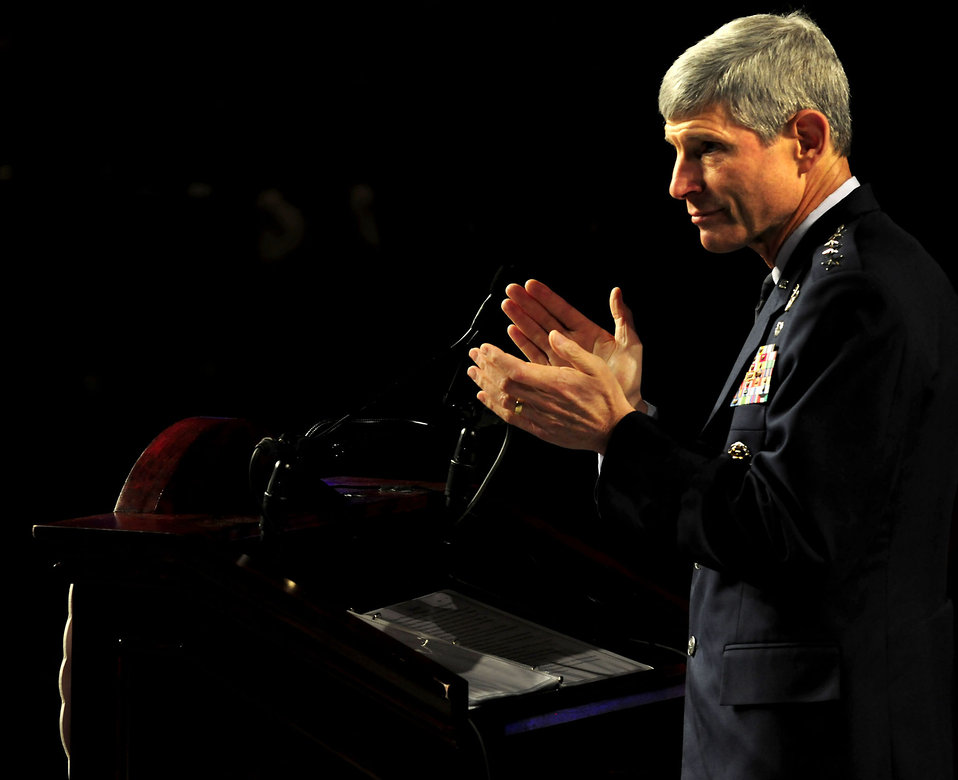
Chief of staff highlights contributions

Air Force Chief of Staff Gen. Norton Schwartz applauds for Tech. Sgt. Christopher Frost during remarks to the Air Force Association 2010 Air and Space Conference and Technology Exposition Sept. 14, 2010, at National Harbor in Oxon Hill, Md. General Schwartz said Sergeant Frost continues to inspire fellow Airmen despite injuries sustained in an explosion of an improvised explosive device. During his address, General Schwartz discussed the role of the Air Force in the 21st century strategic environment.